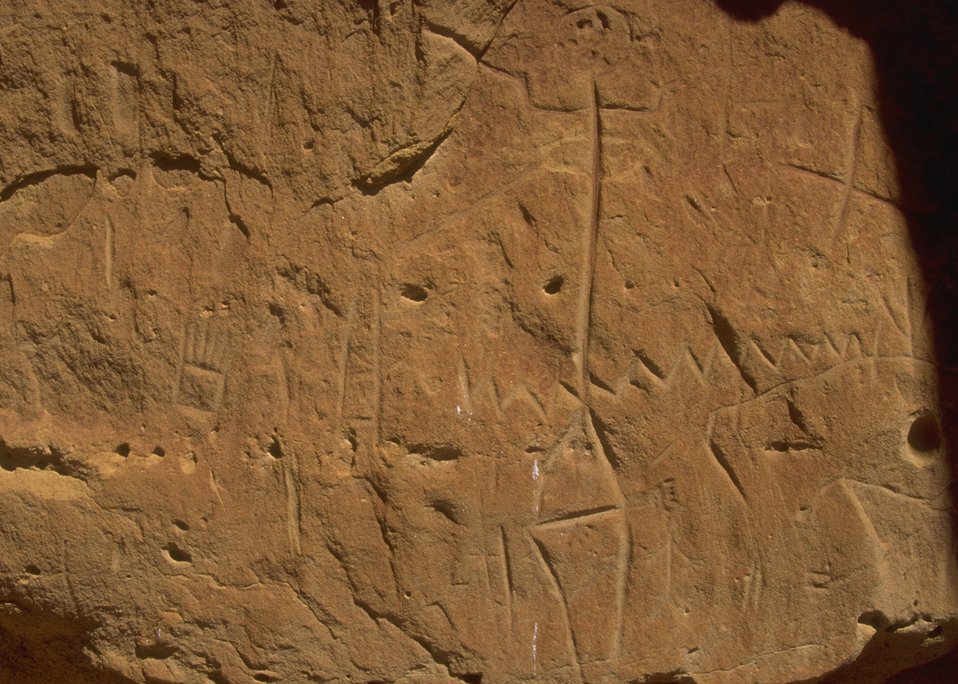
White Mountain Petroglyphs, Rock Springs Field Office.